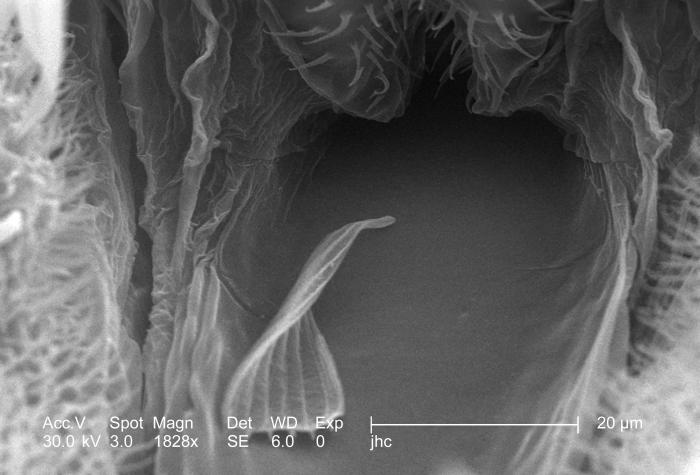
Magnified 1828x, double that of PHIL 8784, this scanning electron micrograph (SEM) revealed some of the morphologic features displayed on the exoskeletal surface of an Anopheles gambiae mosquito's anterior head region. Included in this field of view was the proboscis, and two maxillary palps. What is important in this particular view is the configuration of the "mouth", from which emanates the "labrum", which is the larger of the two sharp stylets that are used to penetrate the skin of the host when obtaining a blood meal. The labrum is a trough-like structure that guides blood up the proboscis, and into the insect's mouth.